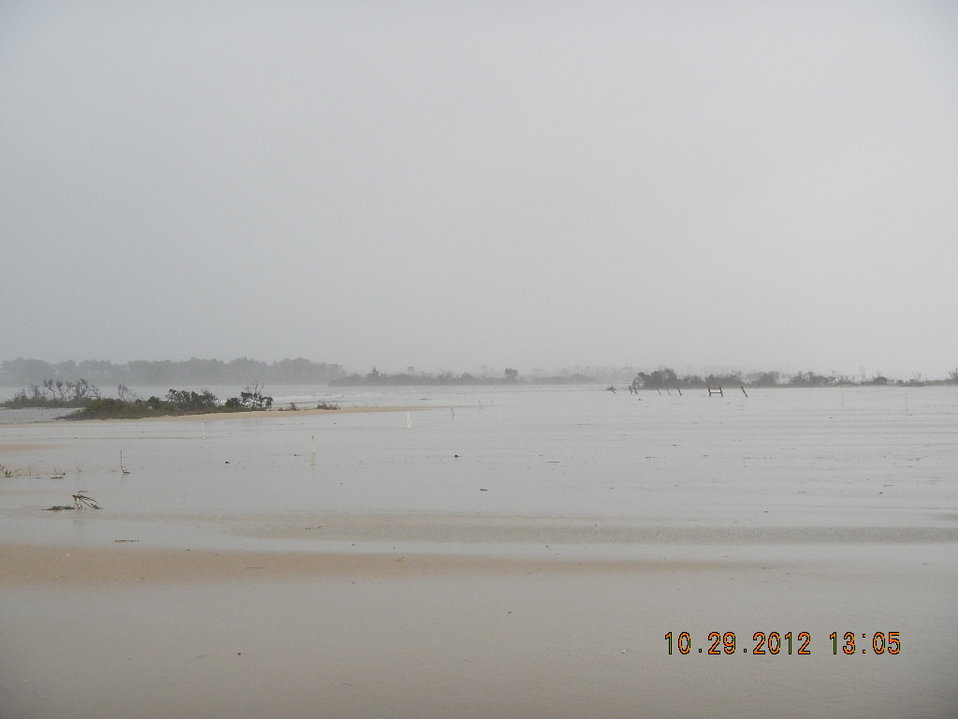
Parking Lot 1 at Chincoteague National Wildlife Refuge (VA)

Parking lot 1 at Chincoteague on Monday afternoon 10/29/12.